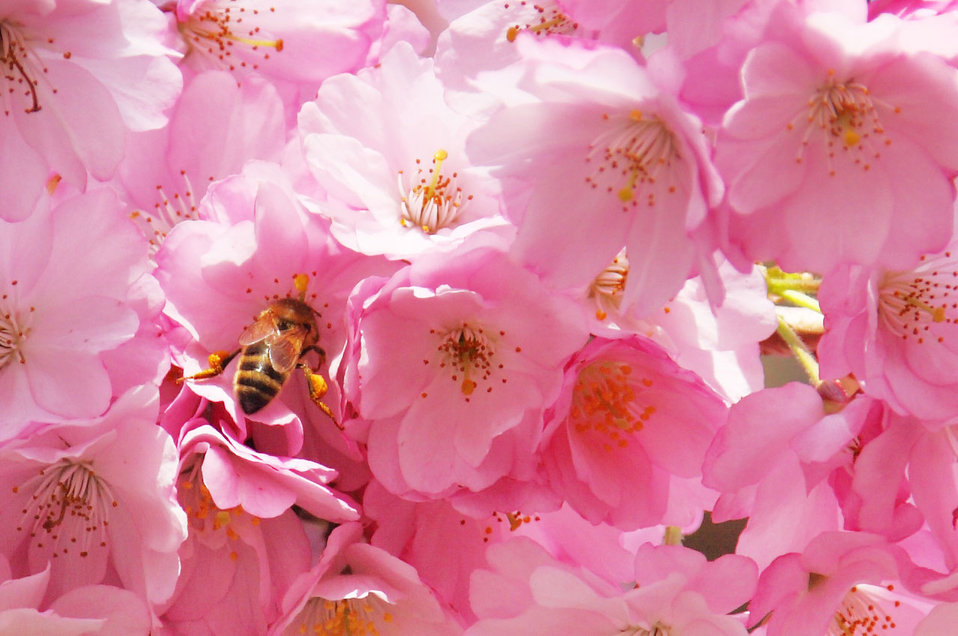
Pollinating bee on flowering tree.